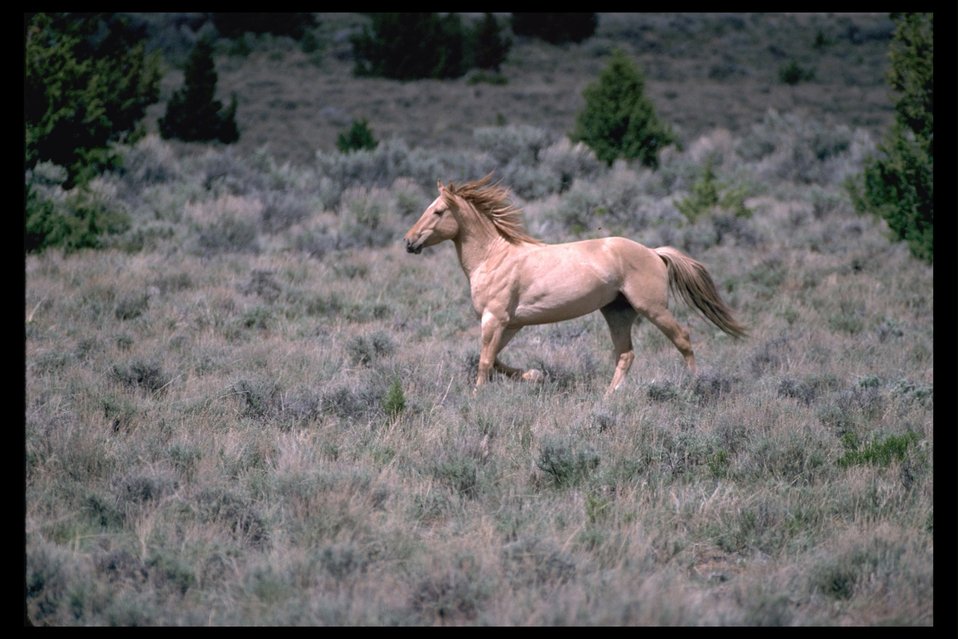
Yellow Sand Stallion on Kiger HMA.